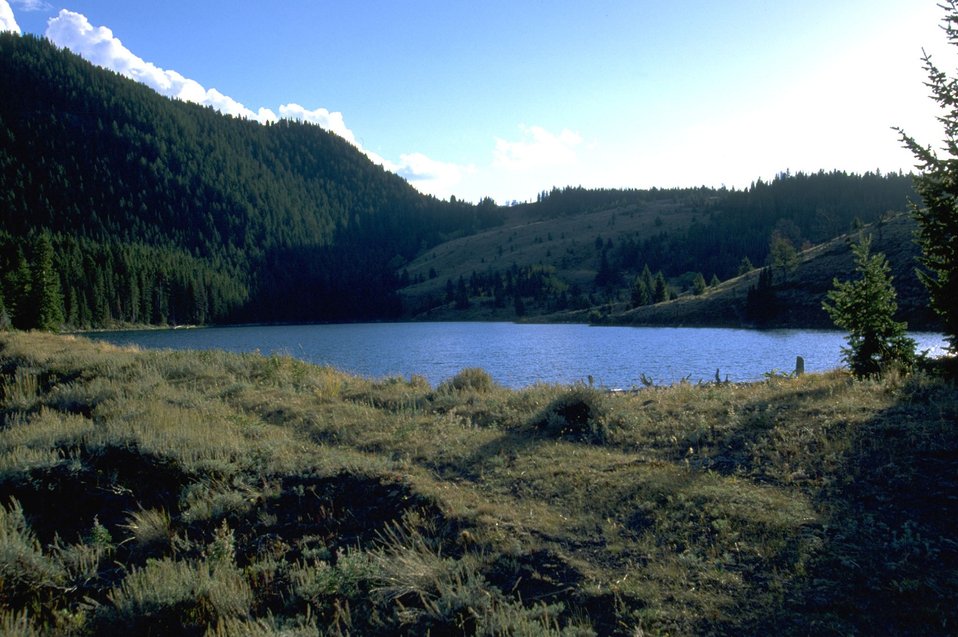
Lake surrounded by tree-covered hills